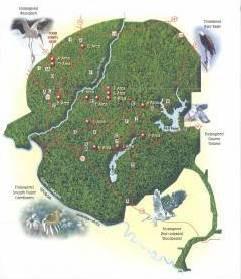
TOUR MAP OF THE SAVANNAH RIVER SITE.

THE SAVANNAH RIVER SITE IS LOCATED IN THE STATE OF SOUTH CAROLINA, BORDERED TO THE WEST BY THE SAVANNAH RIVER AND GEORGIA, CLOSE TO MAJOR CITIES, INCLUDING AUGUSTA AND SAVANNAH, GA AND COLUMBIA, GREENVILLE AND CHARLESTON, SC. THE SRS MISSION IS TO SERVE THE NATION THROUGH SAFE, SECURE, COST EFFECTIVE MANAGEMENT OF THE NUCLEAR WEAPONS STOCKPILE, NUCLEAR MATERIALS, AND THE ENVIRONMENT.